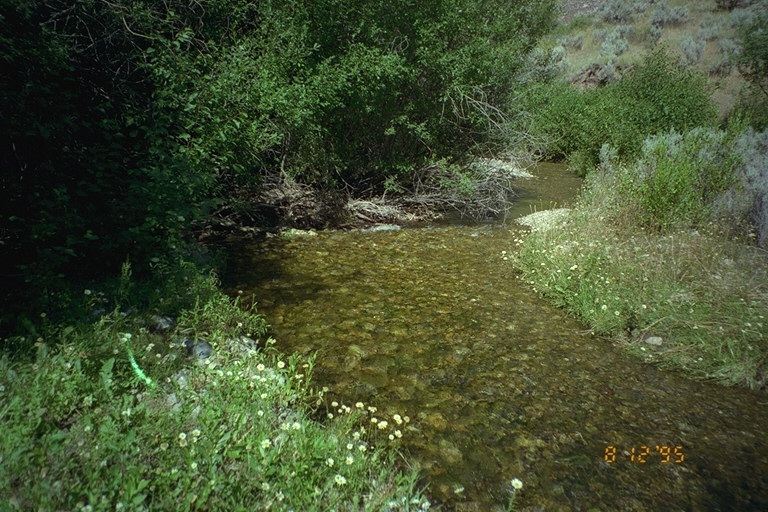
Riparian area Public Lands Salmon Field Office UCSC Upper Columbia Salmon Clearwater District